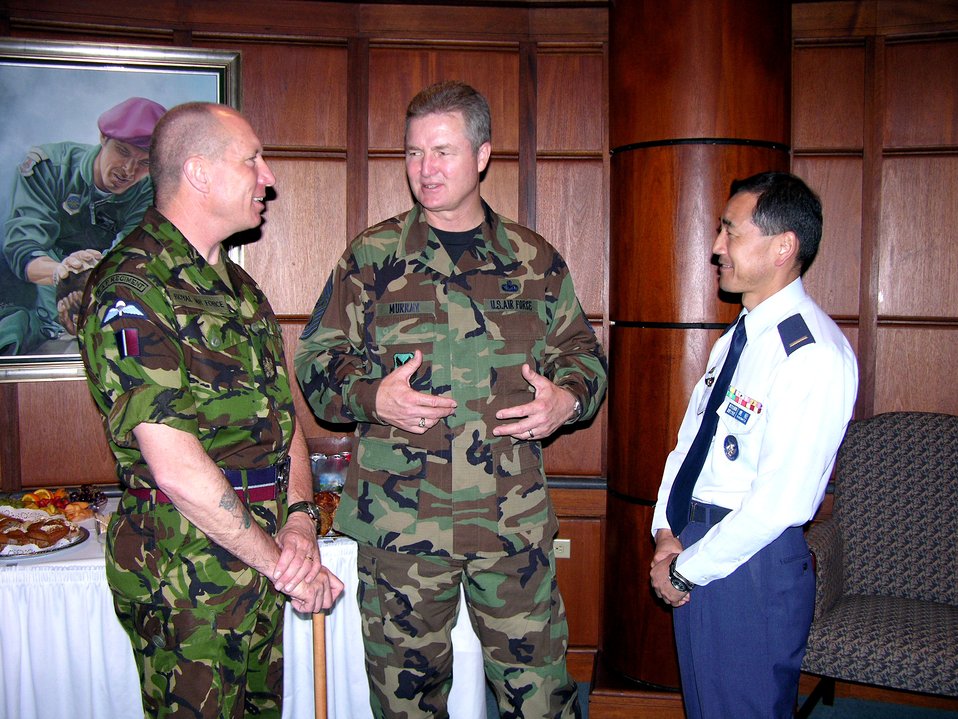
Worldwide conference

Chief Master Sgt. of the Air Force Gerald R. Murray discusses the progress of the Worldwide Command Chiefs Conference with his British counterpart, Warrant Officer Bob Loughlin, and his Japanese counterpart, Warrant Officer Ryuichi Kanomata, during a break at the Air Force Senior NCO Academy at Maxwell-Gunter Air Force Base, Ala., on Monday, April 24, 2006.